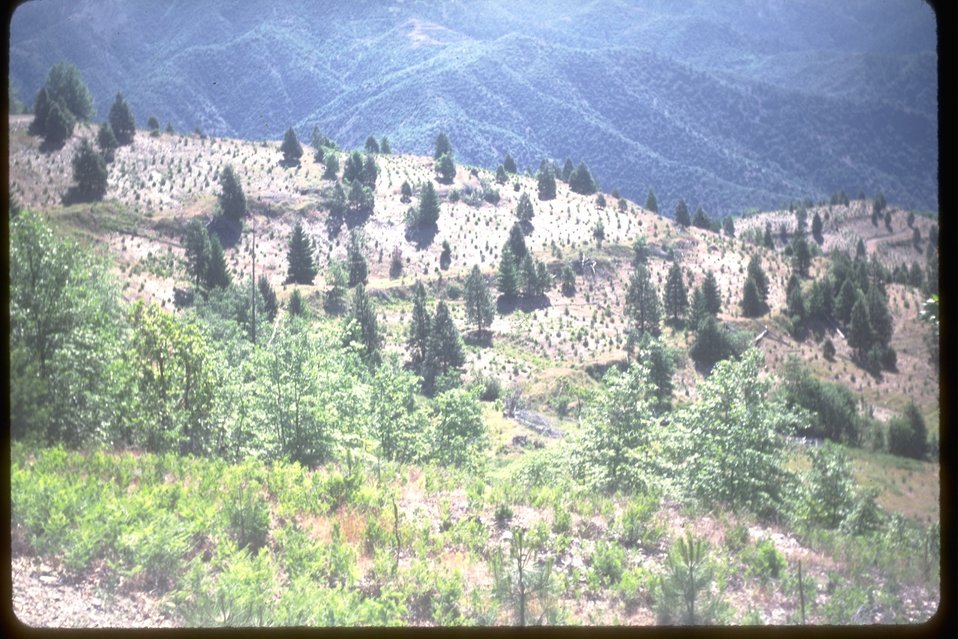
Brushfield scarification project with recently planted trees.